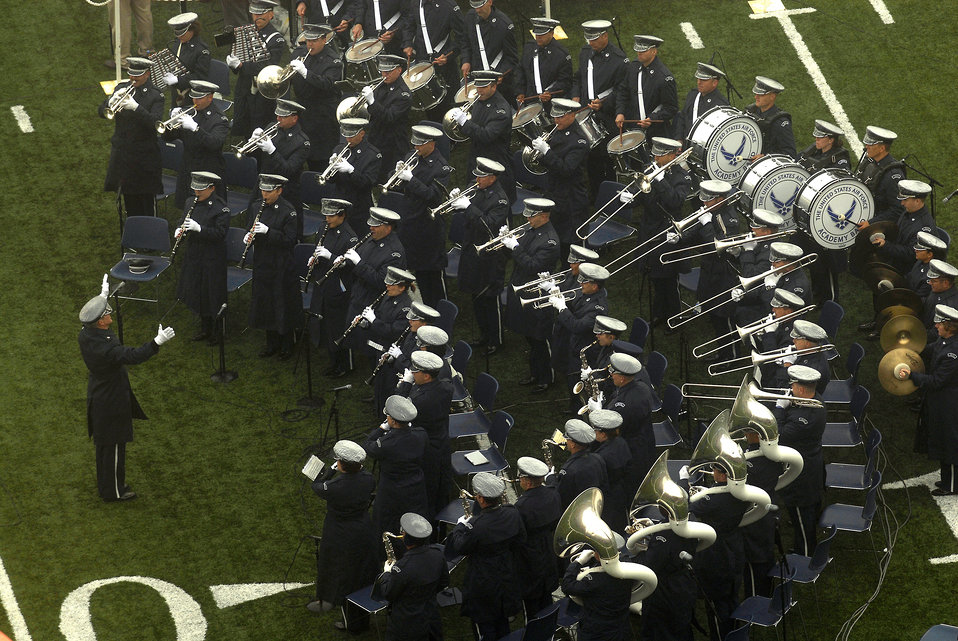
The 50th Academy class graduates

The U.S. Air Force Academy Band plays during the Class of 2008 Academy graduation ceremony at Falcon Stadium May 28. The Class of 2008 graduated 1,012 cadets who will enter the Air Force as second lieutenants.